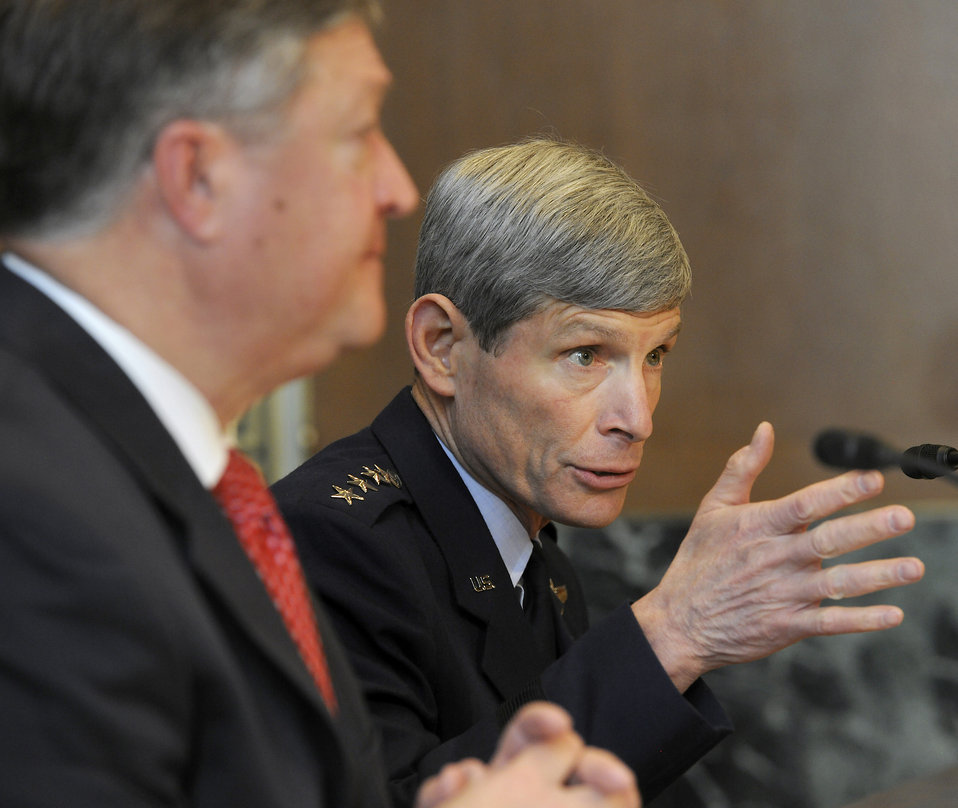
FY 13 budget testimony

Air Force Chief of Staff Gen. Norton Schwartz and Secretary of the Air Force Michael Donley provide testimony about the Air Force’s FY13 budget request before the U.S. Senate Appropriations Subcommittee on Defense on March 14, 2012, in Washington, D.C.